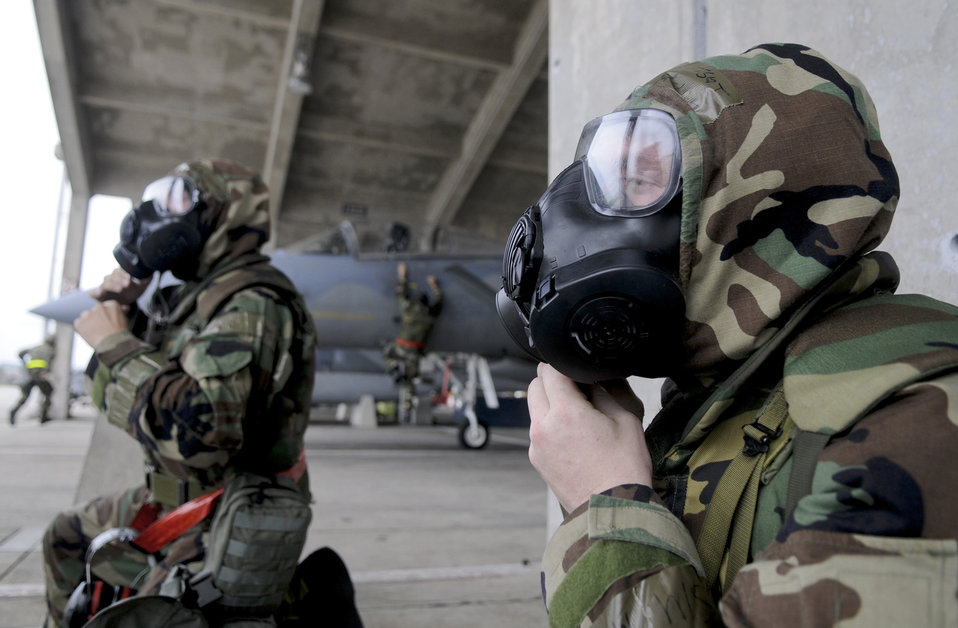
Local operational readiness exercise

Airmen from the 67th Aircraft Maintenance Unit scramble to protect themselves during a simulated aerial attack May 19, 2011, at Kadena Air Base, Japan.